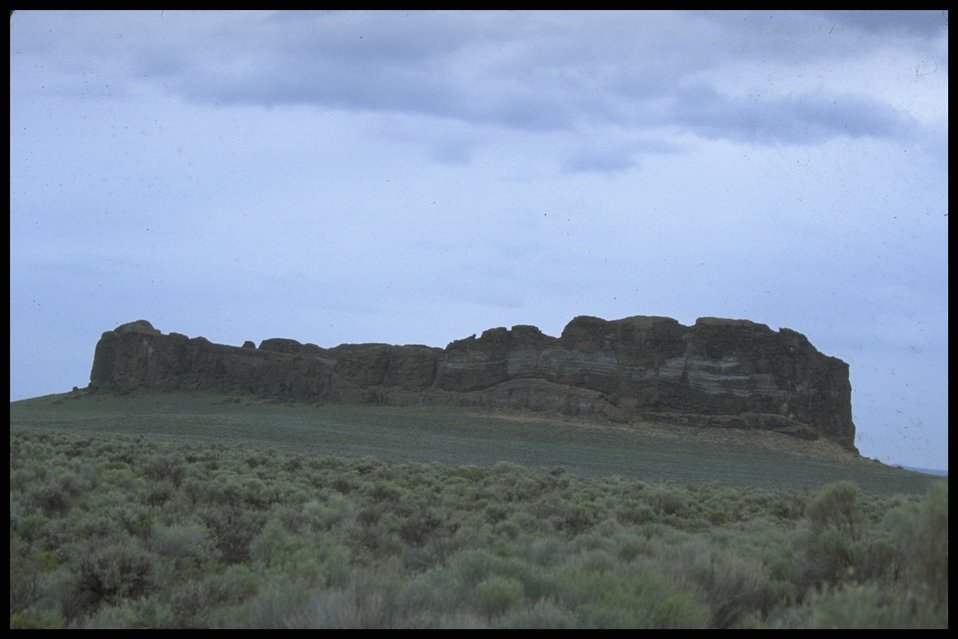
Scenic view, Ft. Rock, Lakeview District.